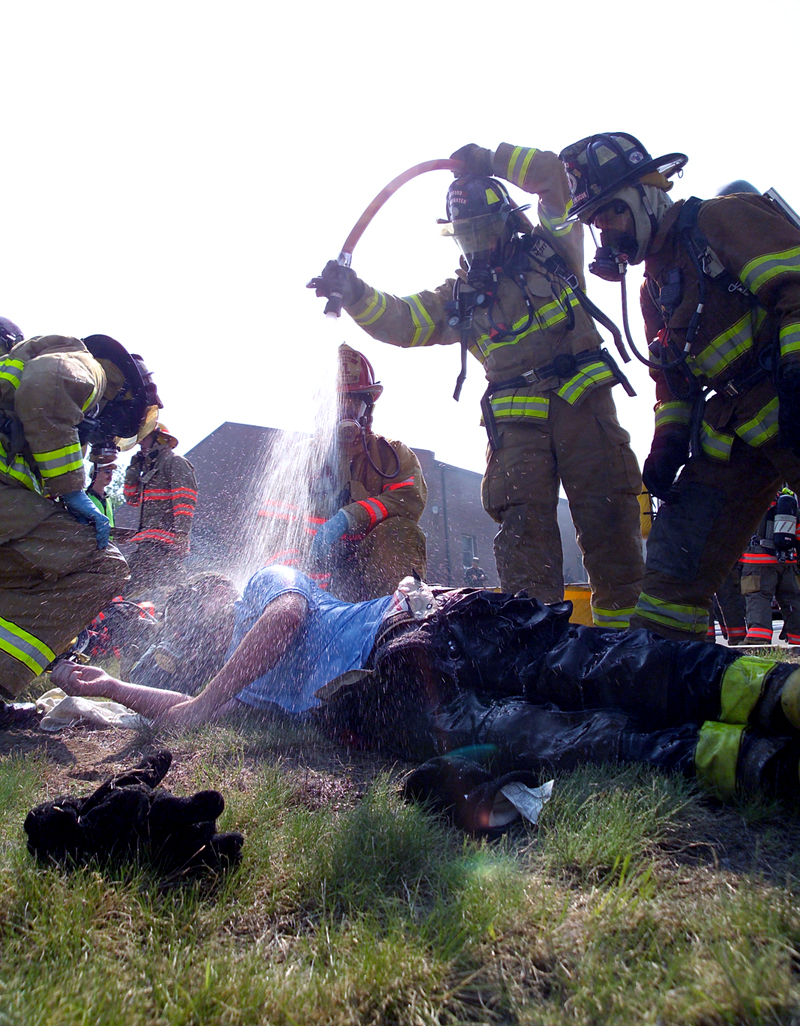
Granite Thunder 2004

NEW BOSTON AIR FORCE STATION, N.H. -- A firefighter from nearby Bedford starts decontaminating a fellow firefighter exposed to a